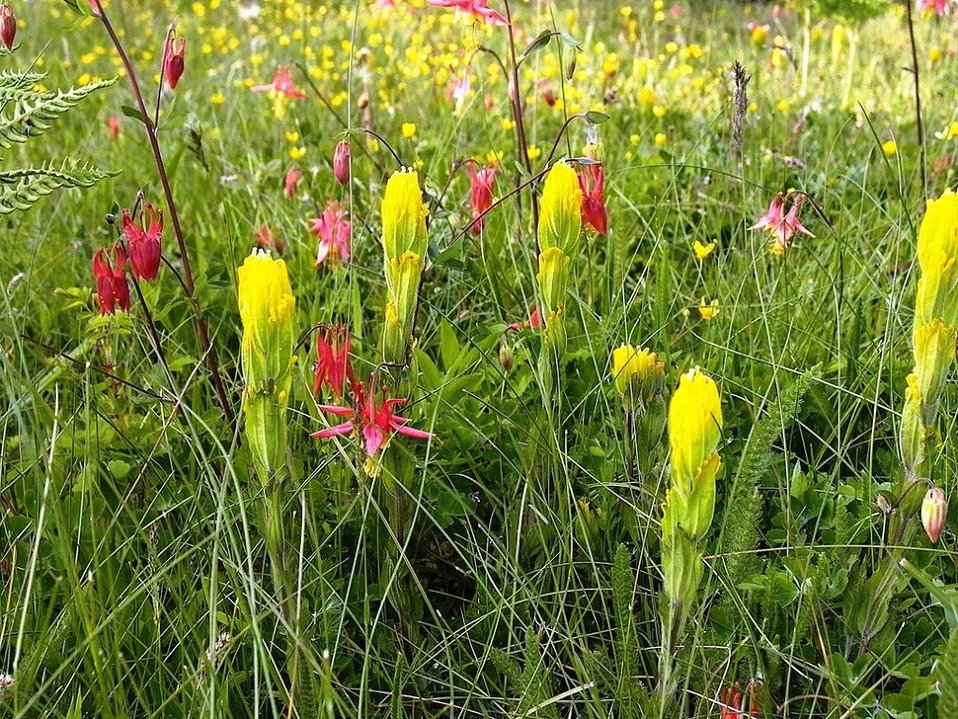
Golden paintbrush

Scientific name: Castilleja levisecta
Status: Threatened